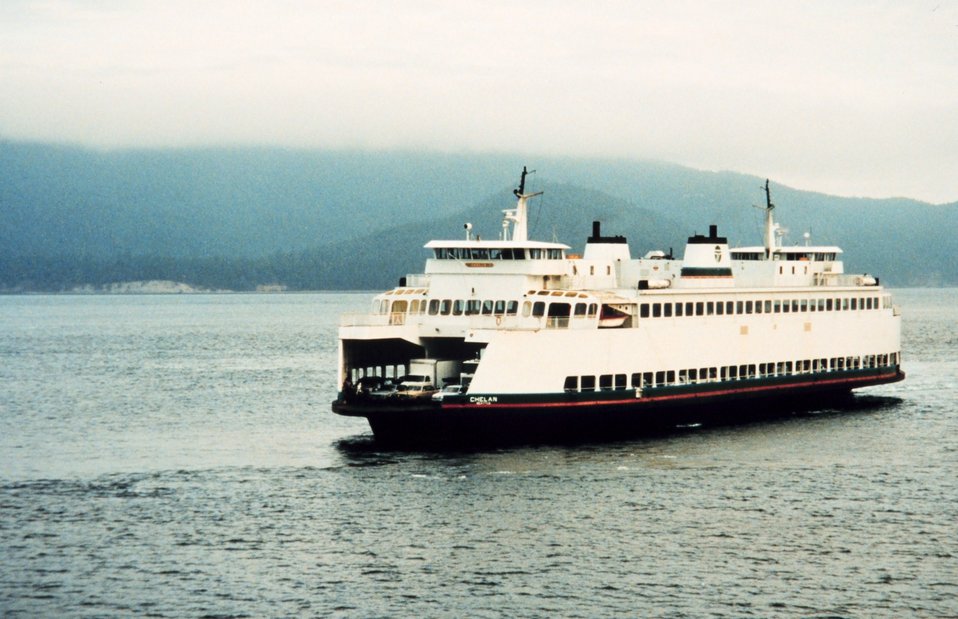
A Puget Sound ferry boat